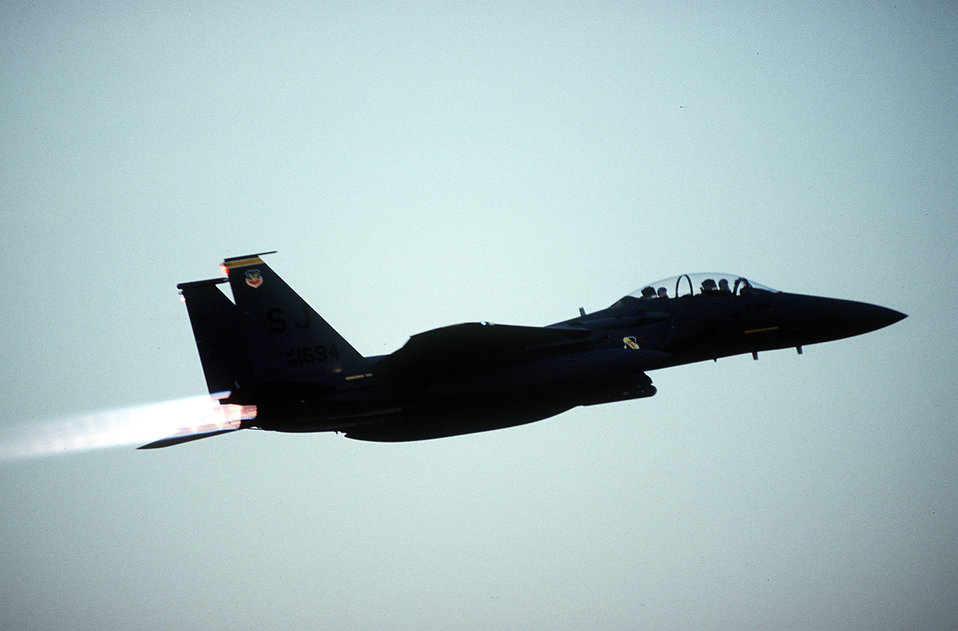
F-15E Eagle aircraft takes off

1990's -- A 336TH Tactical Fighter Squadron F-15E Eagle aircraft takes off on a mission during Operation Desert Shield.